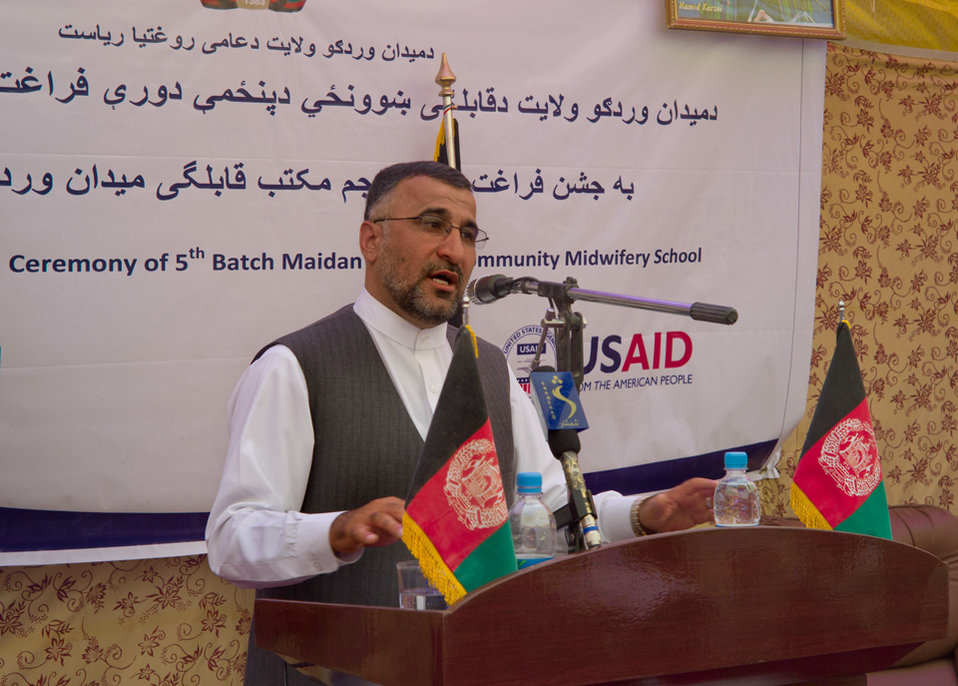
Governor of Wardak Speaking